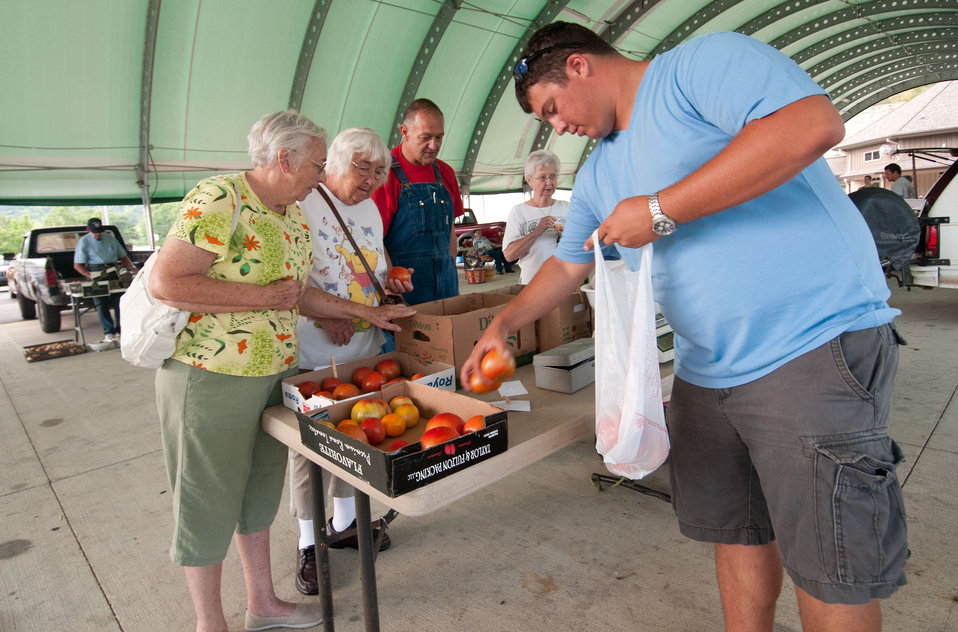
Shandy Karrick (right) is happy to let customers take as long as they like to choose their heirloom tomato's at the Bath County Agricultural Education and Marketing Center, Owingsville, KY, on Friday, July 15, 2011. The Center was the recipient of a $400,000 Rural Business Enterprise Grant. It has given farmers and producers from Bath and surrounding counties the opportunity to manufacture and market their locally grown and locally produced value-added and “Kentucky Proud” branded products, including but not limited to, fresh produce, artisan crafts and specialty food products. The Center is open year-round and allow residents to sell products in four different retail categories, including Kentucky products, regional crafts, “green” groceries and bakery/deli. Several producers expressed their gratitude for Rural Development’s assistance in making the center a reality. The project was made possible through funding the American Recovery and Reinvestment Act of 2009 enacted by the 111th United States Congress in February 2009 and signed into law on February 17, 2009, by President Barack Obama.